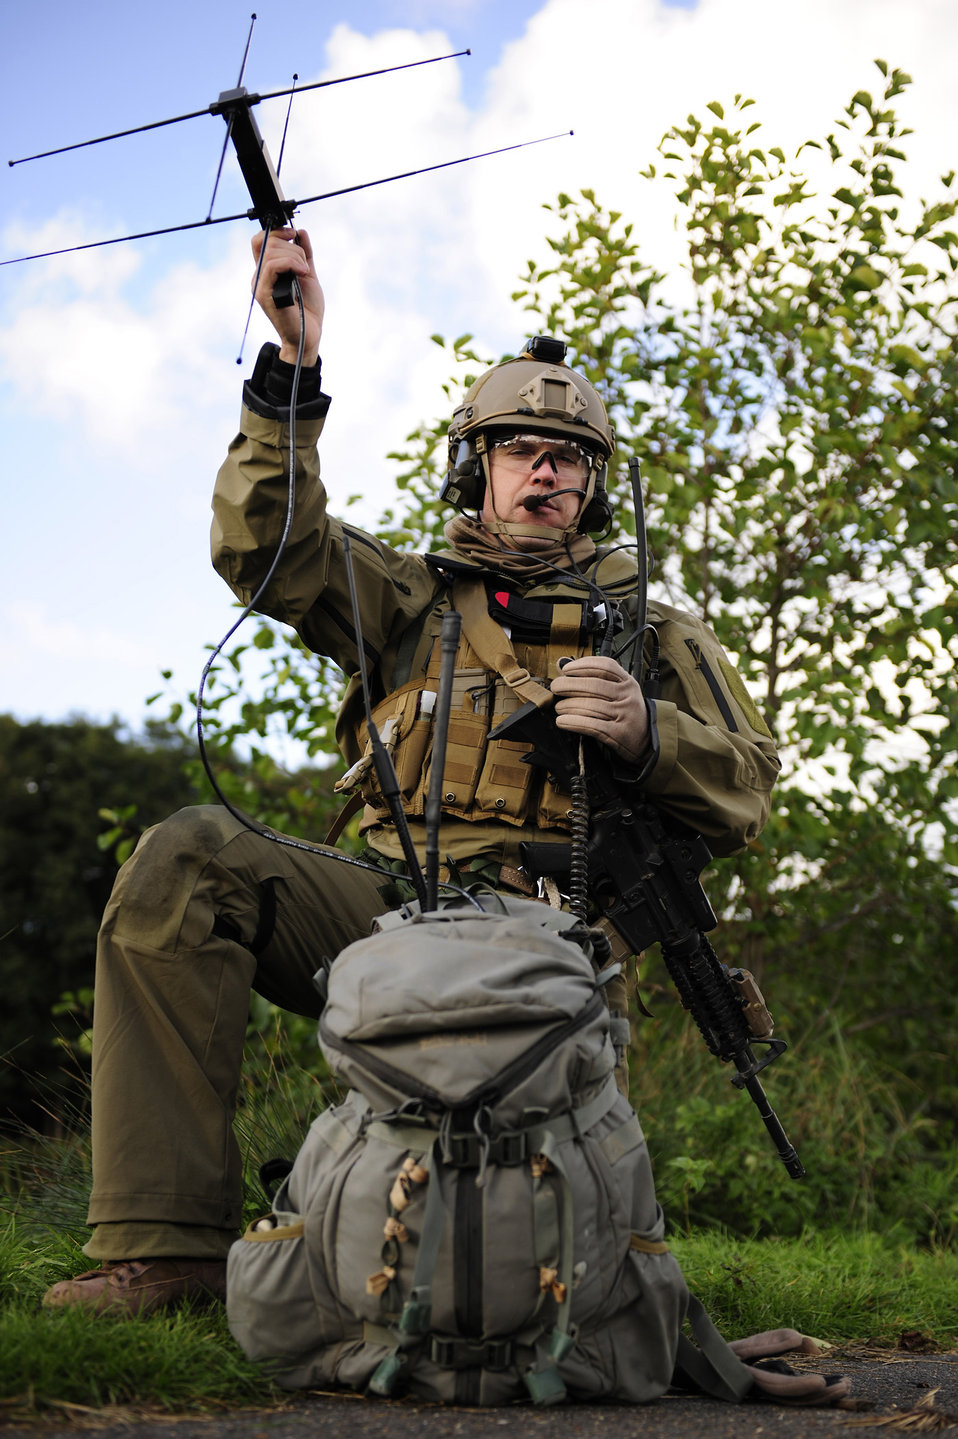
Can you hear me?

Capt. Luke Bates uses a man-pack radio to pass updates to his operations desk during an exercise Oct. 20, 2010, at the Stanford Training Area in England. Captain Bates is a combat rescue officer with the 56th Rescue Squadron at Royal Air Force Lakenheath, England.